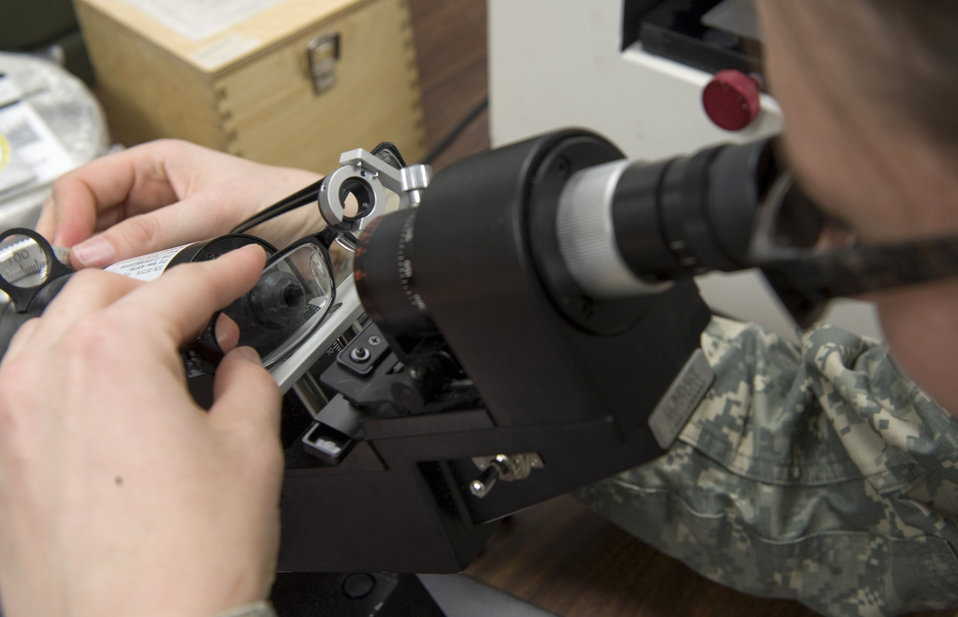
Seeing Clearly

Army Spc. Alisha Weatherby inspects a new pair of eyeglasses during Operation Arctic Care April 12, 2010, in Kotzebue, Alaska. Specialist Weatherby is an optical lab specialist from the Naval Ophthalmic Support and Training Activity in Yorktown, Va.